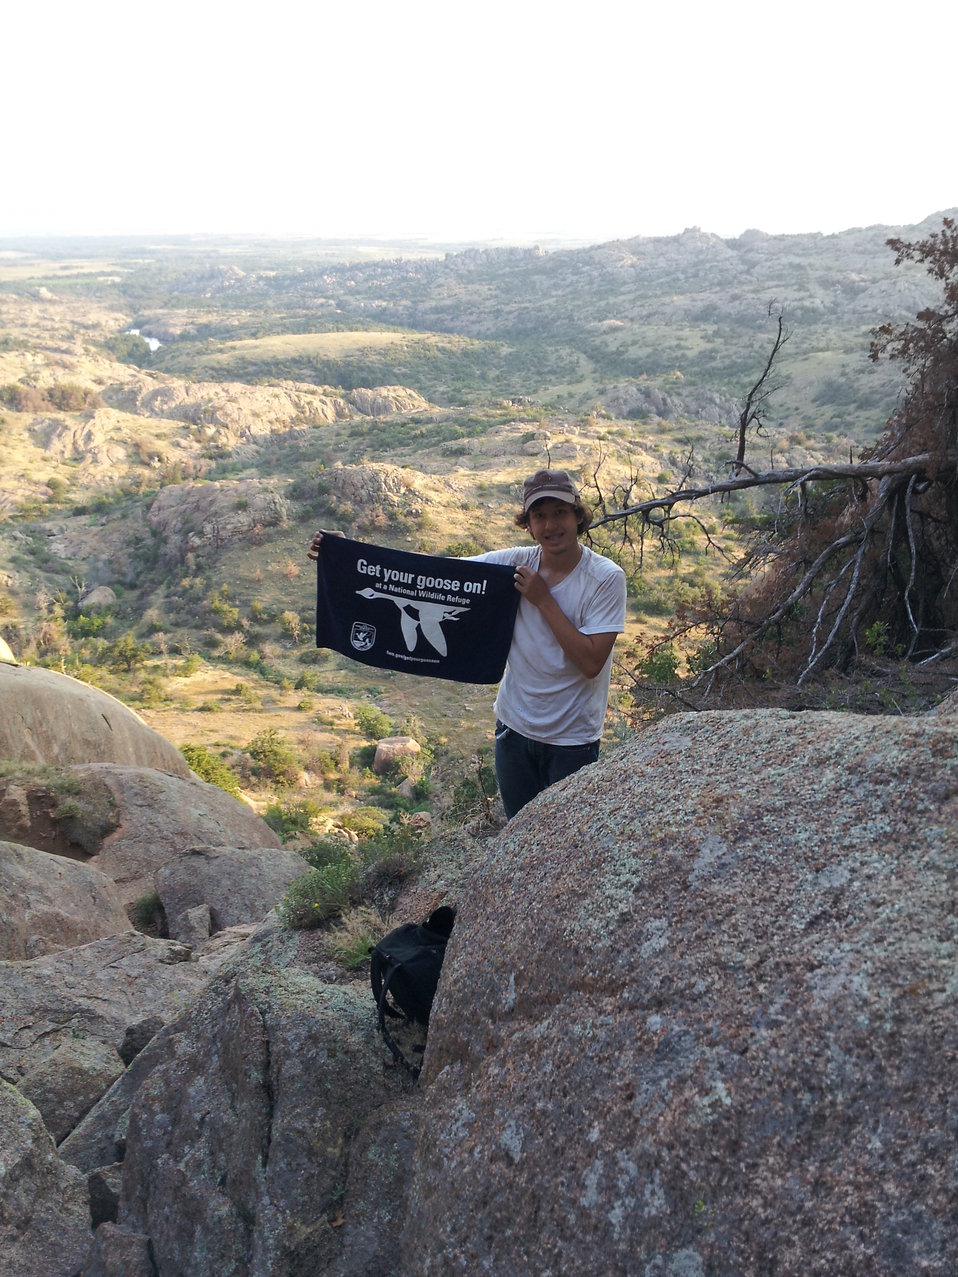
Get Your Goose On!

Wichita Mountains National Wildlife Refuge in Oklahoma.